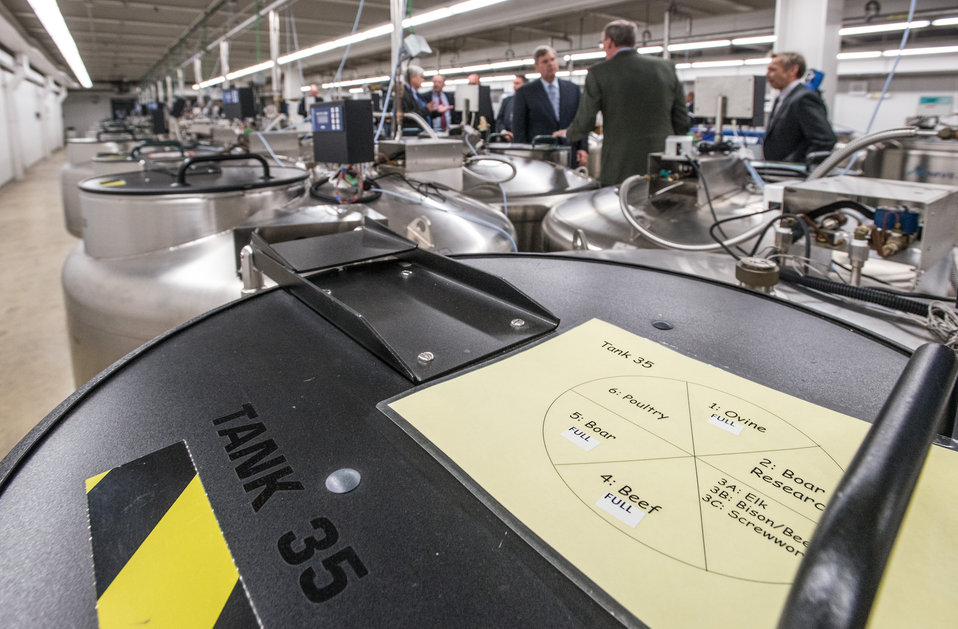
Agriculture Secretary Tom Vilsack tours the Cryogenic Storage Vault at the U.S. Department of Agriculture's (USDA) Agriculture Research Service (ARS) National Center for Genetic Resources Preservation (NCGRP) in Ft. Collins, CO on Wednesday, Nov. 6, 2013. The vault stores 45-50 cryogenic tanks hold animal germplasm, plant tissue culture, and seeds that are stored at -196 °C (-321 °F) in liquid storage or to -193 °C (-315 °F) in vapor storage. NCGRP is the largest agricultural gene bank facility in the U.S. The NCGRP staff conducts groundbreaking research to develop more efficient and effective means for preserving plant and animal germplasm, and for better understanding the genetic structure of these invaluable materials. The research findings, preservation techniques, and specialized technology developed by the NCGRP have been adopted by gene banks around the world: many international scientists travel to the NCGRP for research and training.